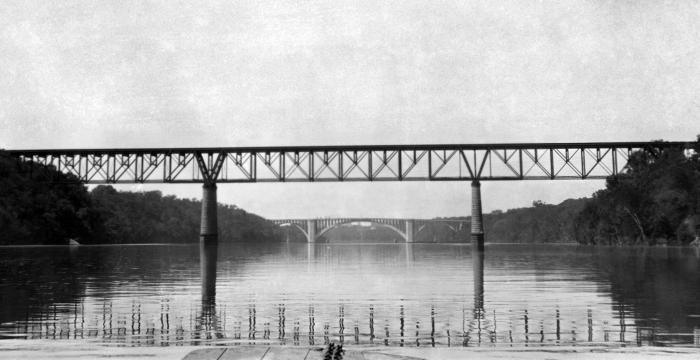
A bridge over the Mississippi river

This was an upstream view of the Mississippi River between Lake Street and Franklin Avenue in Minneapolis-St. Paul, Minnesota. The Franklin Avenue Bridge was in the background of this June 3, 1933 photograph.